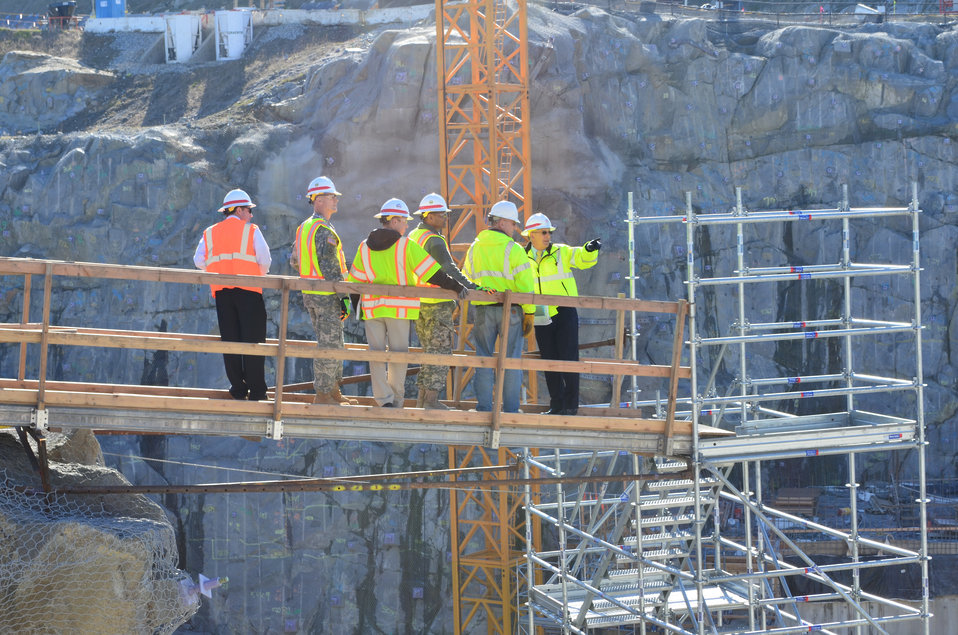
Corps commanding general visits Folsom Dam spillway project

Commanding general of the U.S. Corps of Engineers (third from right), Lt. Gen. Thomas P. Bostick, tours the Folsom Dam auxiliary spillway construction site in Folsom, Calif., Jan. 16, 2013. The spillway project is scheduled for completion in 2017.